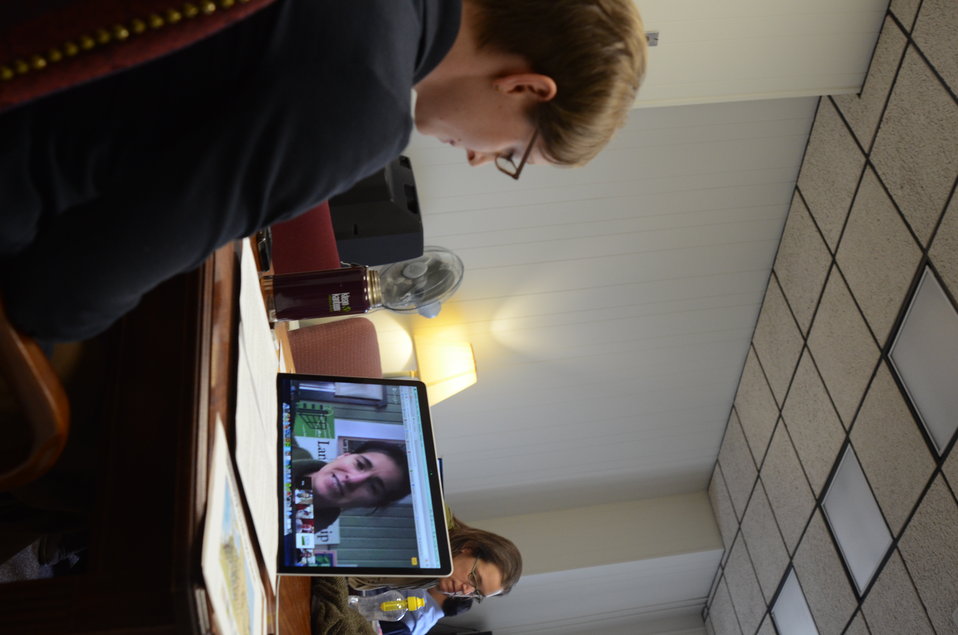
U.S. Department of Agriculture (USDA) National Coordinator for Local and Regional Food Systems Elanor Starmer leads a live Google Hangout to discuss the importance of a comprehensive Food, Farm and Jobs Bill to local and regional food systems at USDA on Thursday, Nov. 21, 2013.